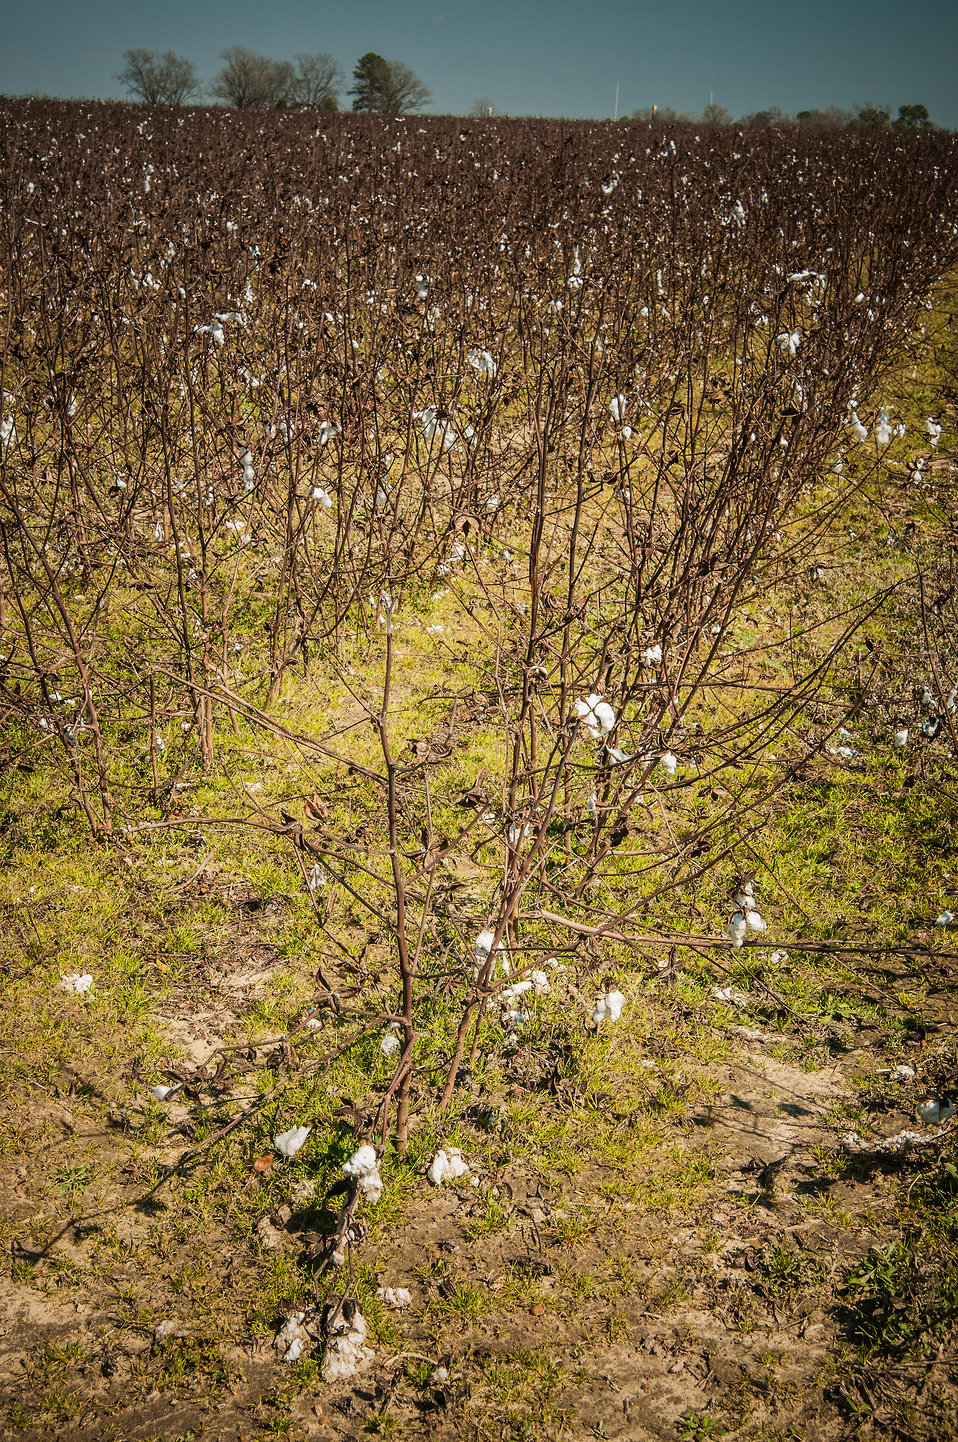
Georgia cotton grows in Dooly County, GA on Mar. 6, 2013. The cotton harvest in Georgia is normally from September through early November. Dooly County has been designated as a U.S. Department of Agriculture (USDA) Strike Force Initiative county selected to receive assistance to relieve persistent poverty in high poverty counties.